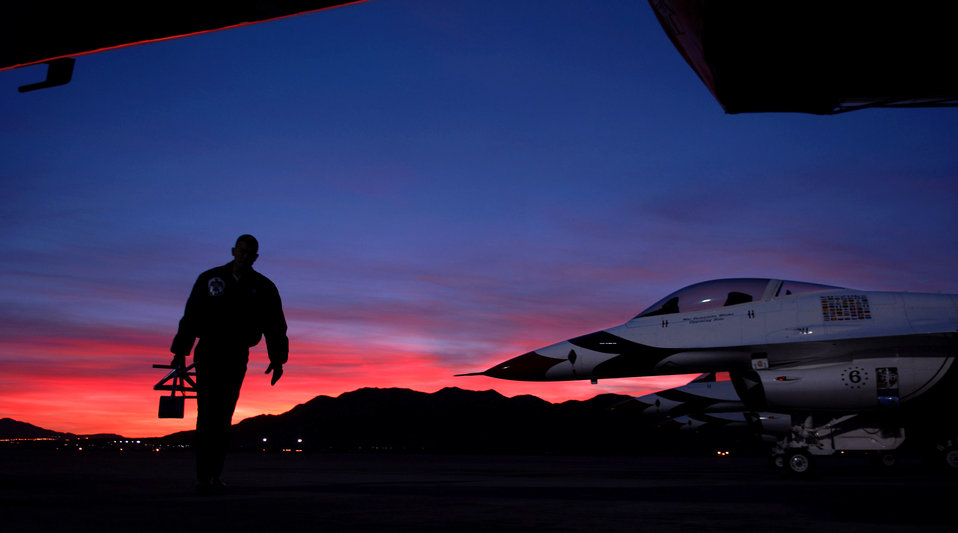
Getting a start on the day

Staff Sgt. Steve Radnor is up early at Nellis Air Force Base, Nev., preparing a U.S. Air Force Thunderbird aircraft for the day's training mission Thunderbird pilots accomplish more than 150 training missions in preparation for the eight-month air show season.